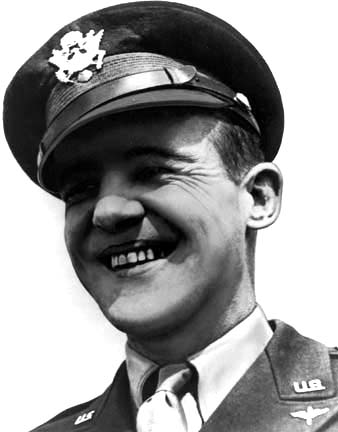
Lt. Col. Addison E. Baker